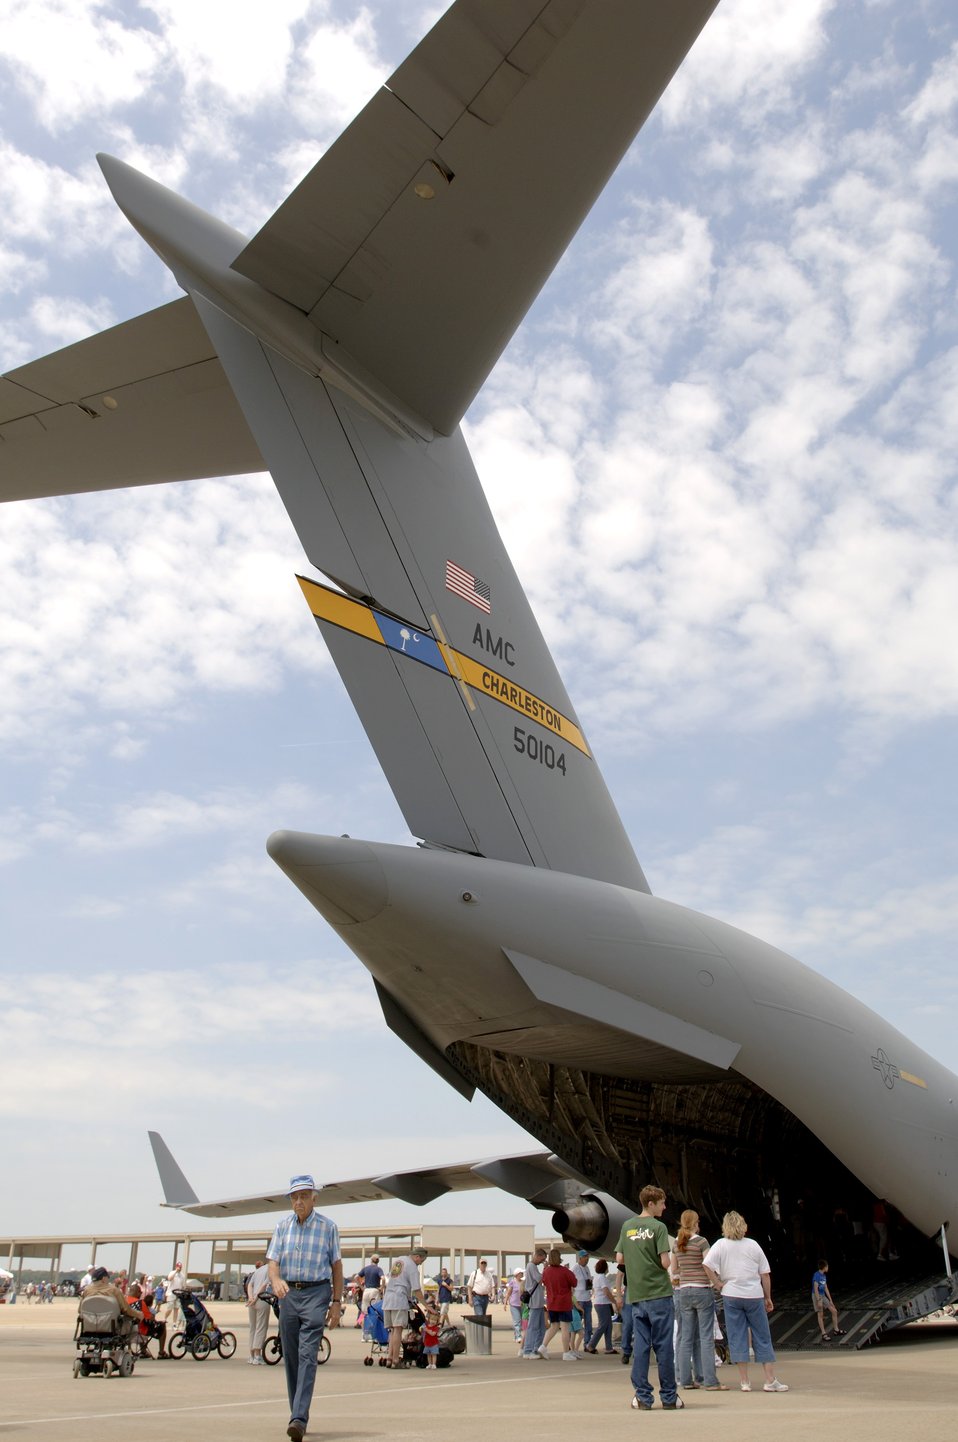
Air Power Over Hampton Roads Air Show 2006

Visitors to the annual Air Power over Hampton Roads Air Show view aircraft such as the C-17 Globemaster III on Saturday, May 6, 2006, at Langley Air Force Base, Va.